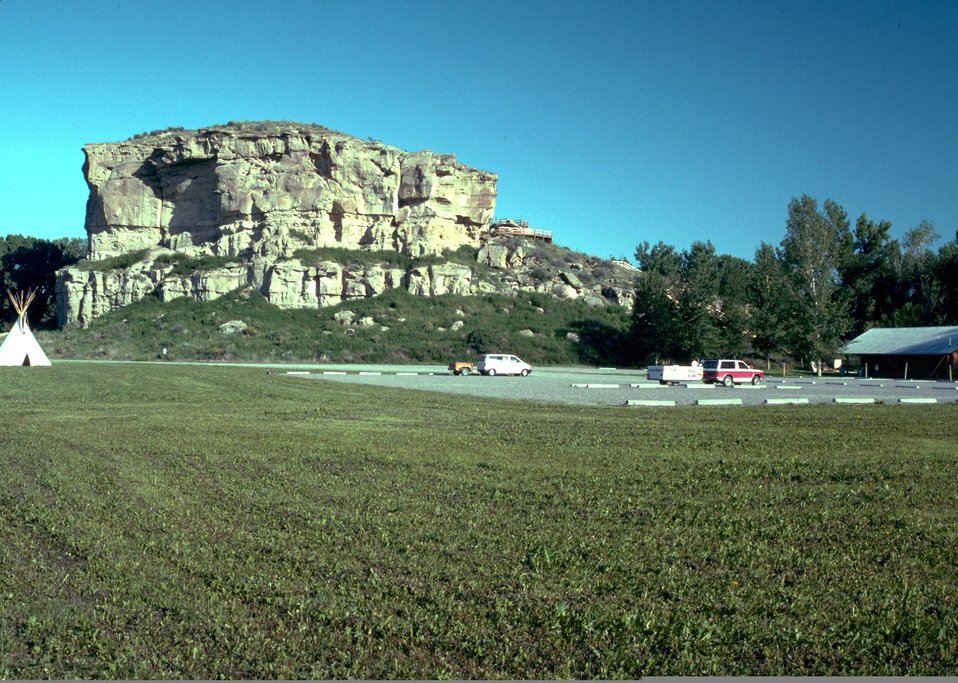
Pompeys Pillar National Monument